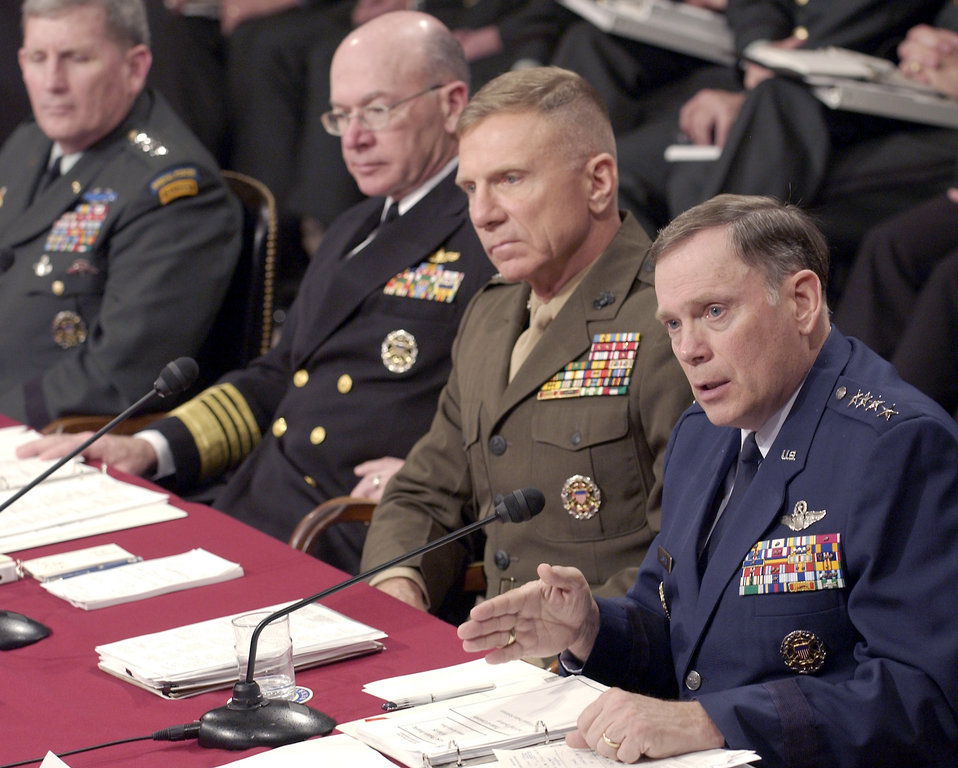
General Jumper testifies on 2006 Air Force posture, budget

WASHINGTON -- Service chiefs answer questions during a hearing of the Senate Committee on Armed Services here Feb. 10. They are (from left) Army Chief of Staff Gen. Peter J. Schoomaker, Chief of Naval Operations Adm. Vernon E. Clark, Marine Corps Commandant Gen. Michael W. Hagee and Air Force Chief of Staff, Gen. John P. Jumper. The committee heard testimony on the fiscal 2006 defense authorization request.